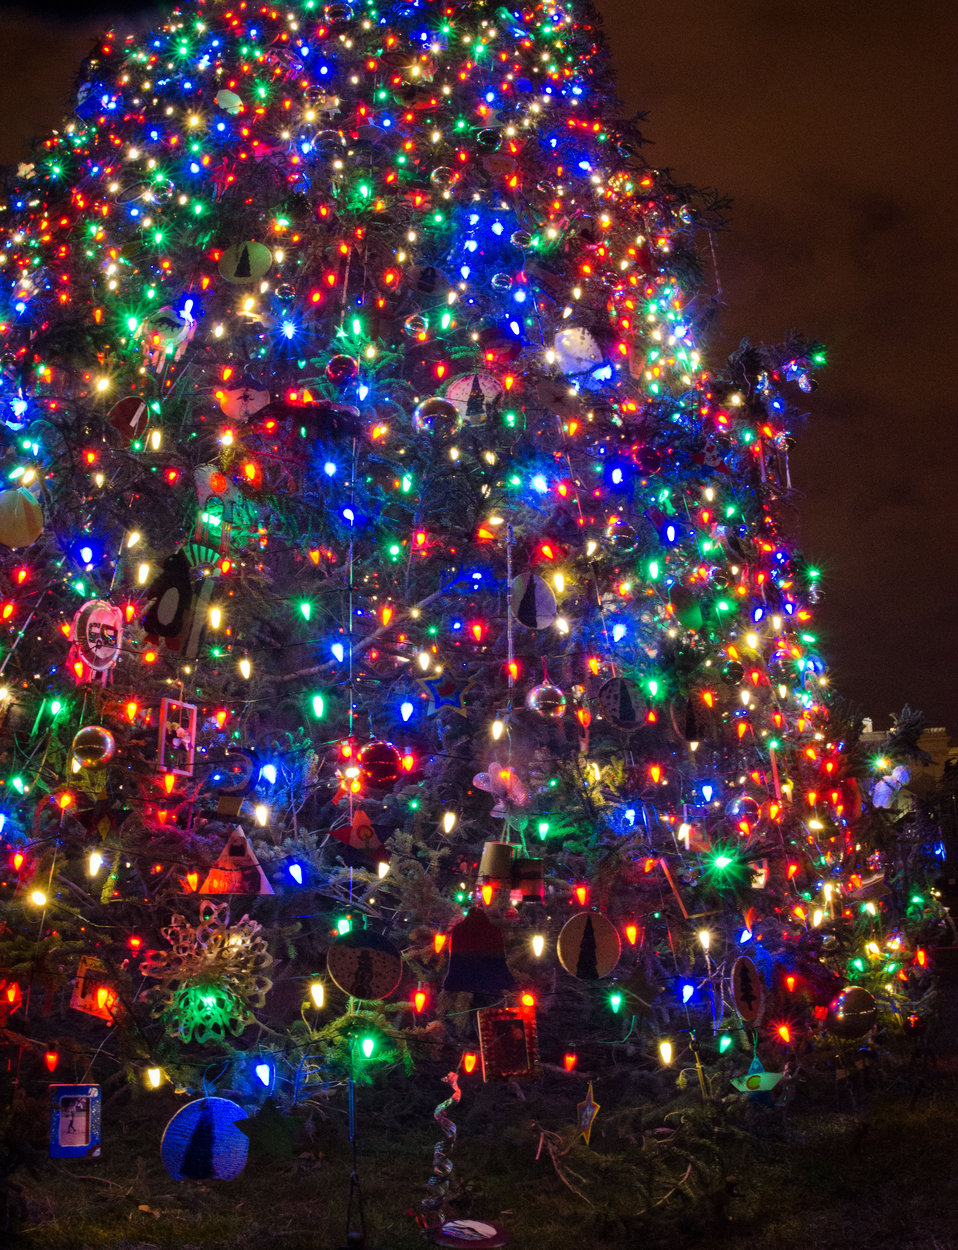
The lights of the 2012 U.S. Capitol Christmas Tree from the Blanco Ranger District of the White River National Forest near Meeker, CO; and decorated with hand-made ornaments, was switched on by Colorado Springs high school student Ryan Shuster and House Speaker John Boehner, on Tuesday, Dec. 4, 2012 at the U.S. Capitol in Washington, D.C. Since November, the tree visited dozens of cities across the country as it made its way arriving here on Nov.26, 2012. The 73-foot Englemann spruce traveled from the White River National Forest in Colorado. Other representatives as well as Natural Resources and Environment Under Secretary Harris Sherman spoke during the ceremony.